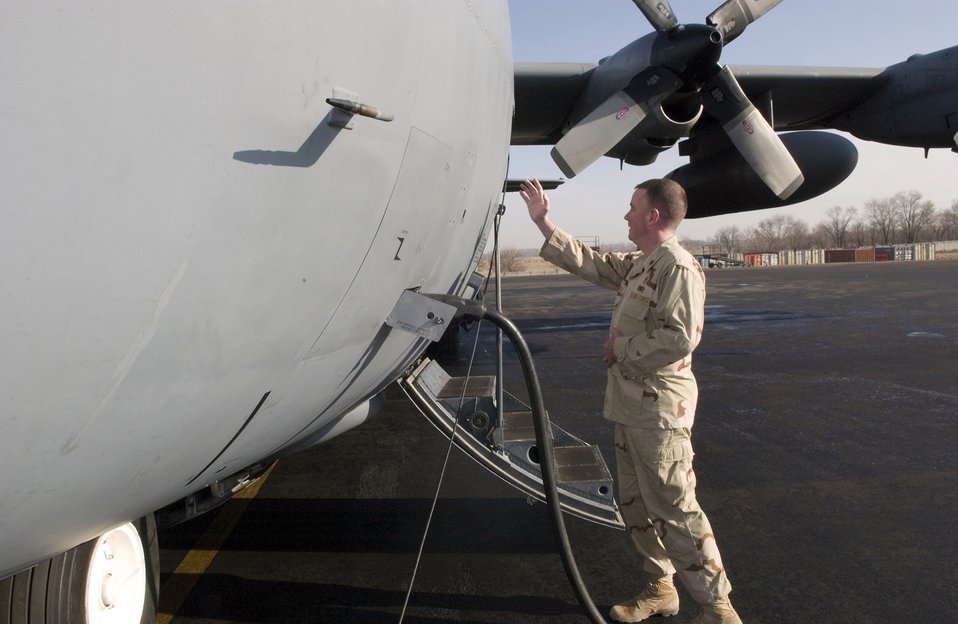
Last Hercules

MANAS AIR BASE, Kyrgyzstan (AFPN) -- Chaplain (Maj.) Mark Rowan blesses the last C-130 Hercules assigned here before its final departure to its new home at Bagram Air Base, Afghanistan. The aircraft is part of the North Carolina Air National Guard's 774th Airlift Squadron.